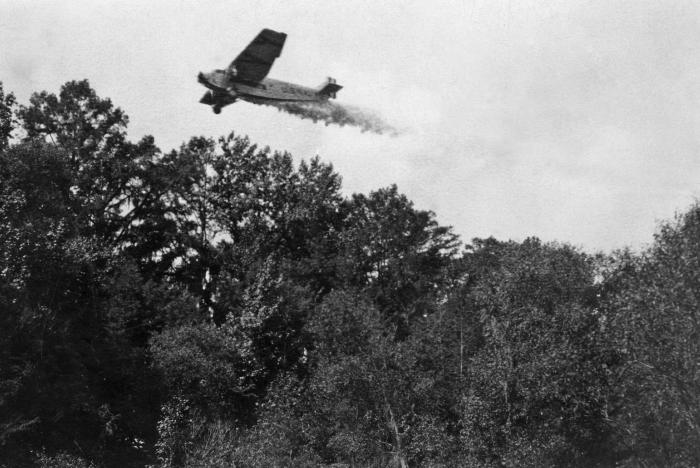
In an attempt at vector control, this 1930s photograph showed a Ford Trimotor aircraft as it was spraying insecticide, in order to help eliminate populations of possible disease-causing mosquitoes in the southern United States.